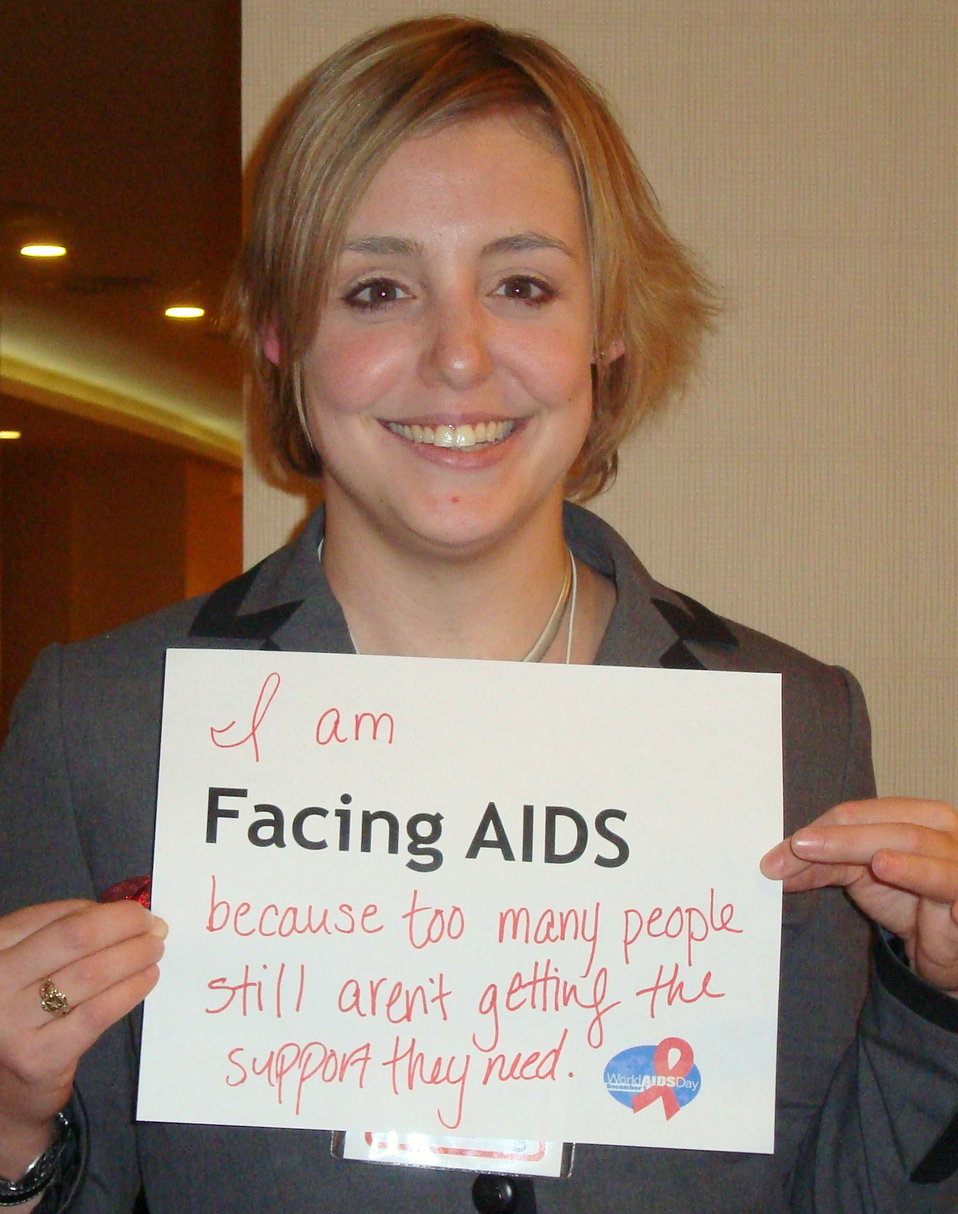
FacingAIDSCampaign 057